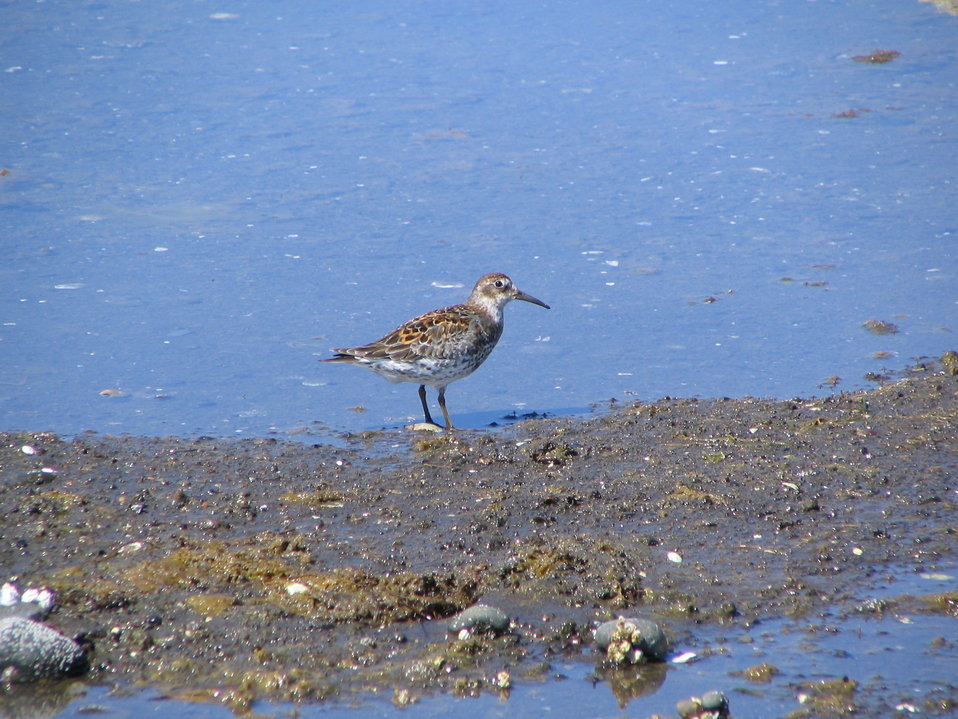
Rock Sandpiper

Kinzarof Lagoon, Izembek National Wildlife Refuge
Photo by Kristine Sowl,
USFWS, Public Domain